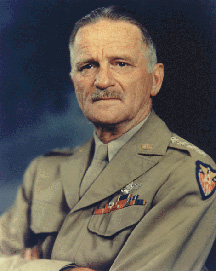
Gen. Carl Spaatz, the first chief of staff of the U.S. Air Force.